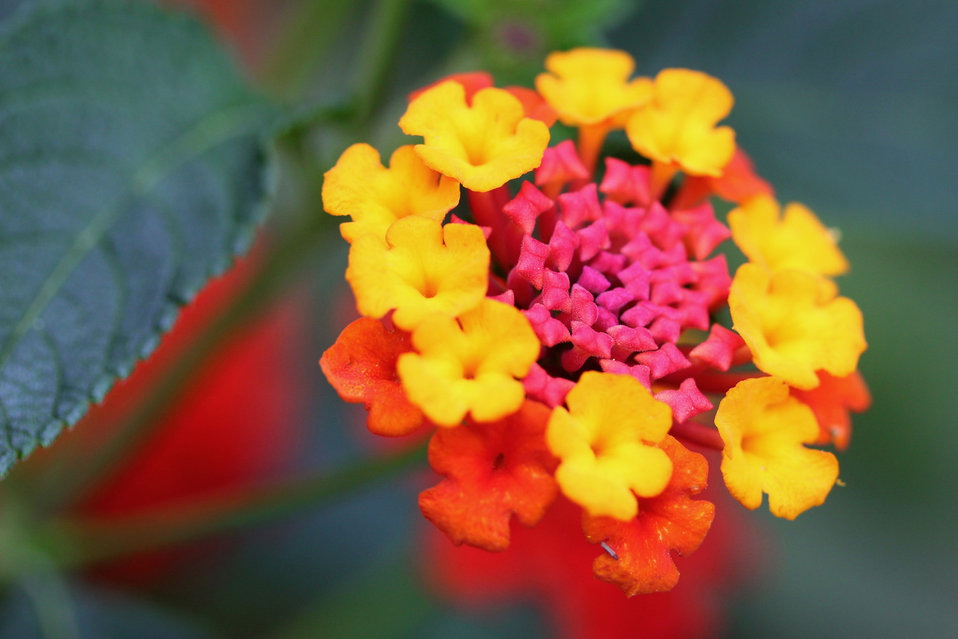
Unusual flower

Unusual bright coloured flower.